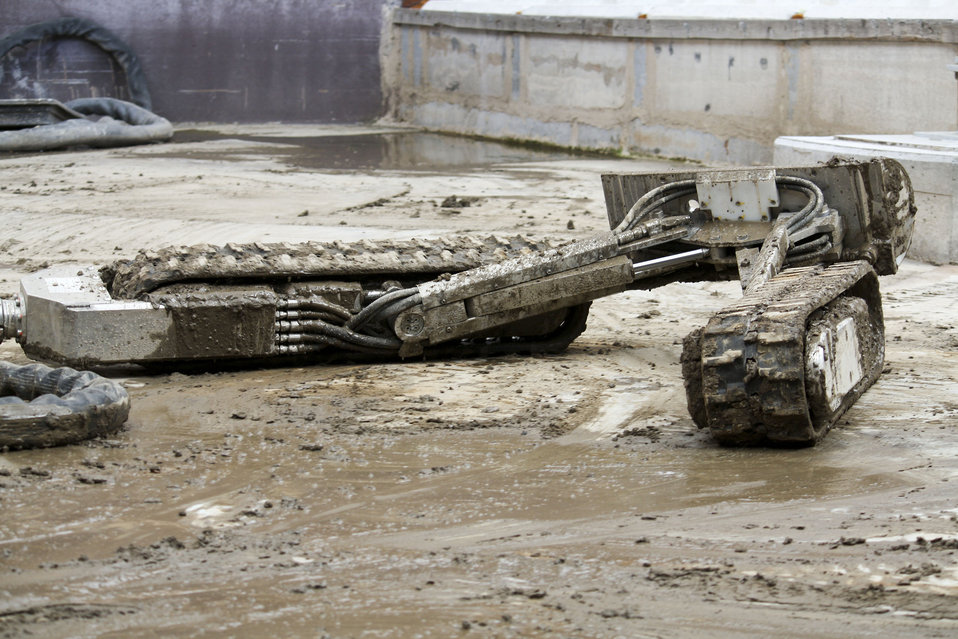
The Foldtrack is a retrieval tool that can be inserted into the tank using existing access ports to position itself on the bottom of the tank or upon the hard top layer of waste.

It is designed to move tank waste using the blade along the front of the unit toward the pump positioned in the center of the tank that moves tank waste from single-shell tanks to double-shell tanks. It also has several high pressure water nozzles used to blast the waste and reduce the size of the tank waste particles to make the waste easier to pump.